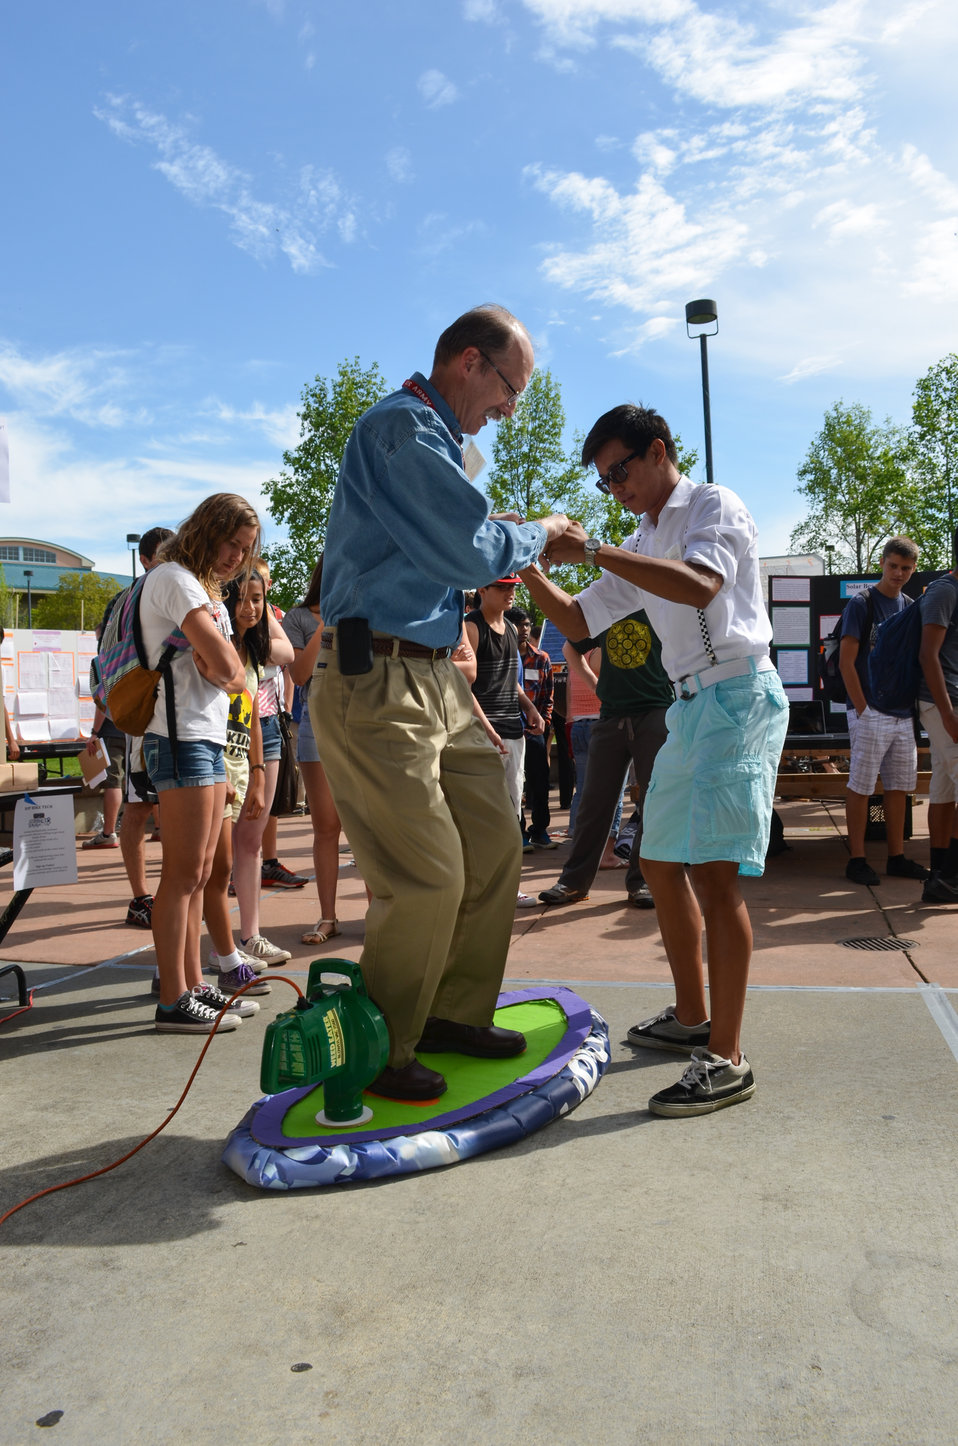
140411-A-BC371-007Brad Call rides a surfing hovercraft

Brad Call, a design chief with the U.S. Army Corps of Engineers Sacramento District, rides a wave of air on a surfing hovercraft during Folsom High School's seventh annual Engineering Challenge April 11, 2014, in Folsom, Calif. Student projects included: hovercrafts, catapults, Tesla coils, electromagnetic propulsion devices, pneumatic wind turbines, voice synthesizers, hydrogen fuel cells, solar electric boats and cars, gene transformation, and orthopedic implants.